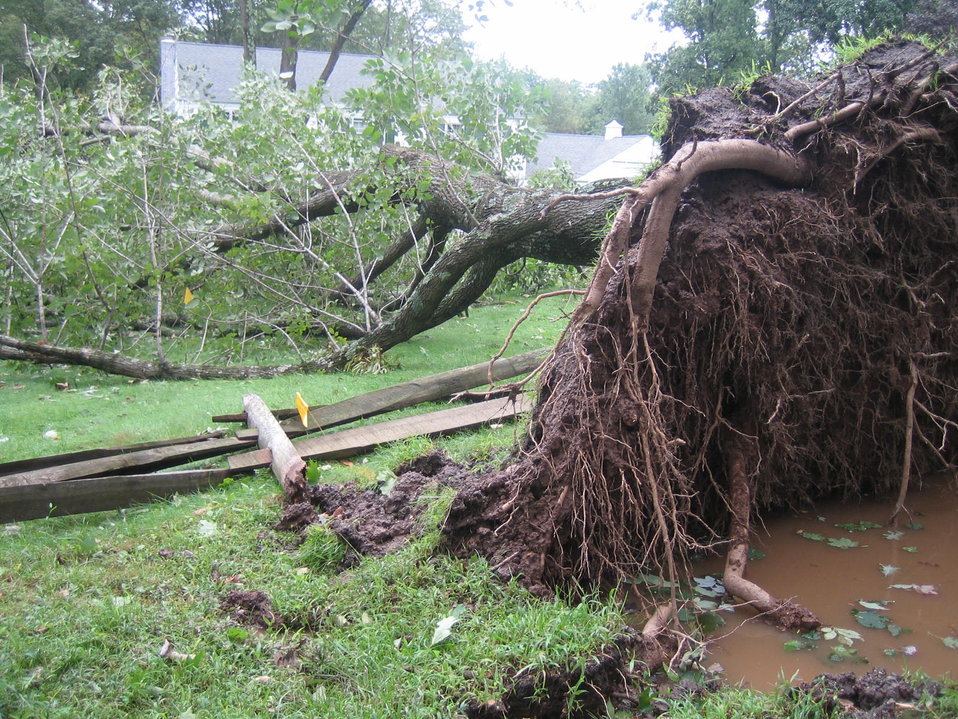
Uprooted tree at Great Swamp

Uprooted tree from Hurricane Irene at Great Swamp National Wildlife Refuge in New Jersey.